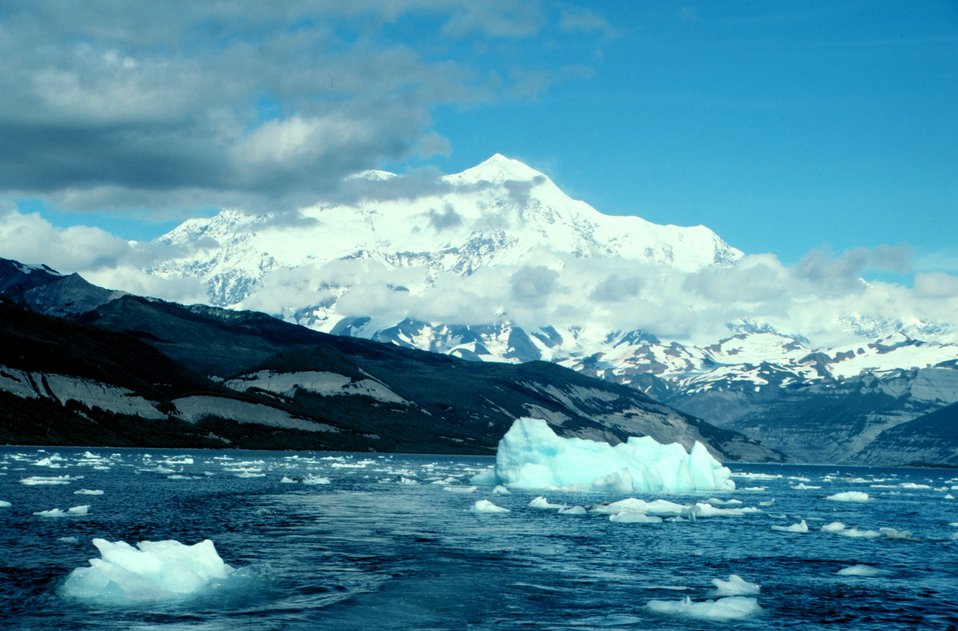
Photo #11 of Mount St. Elias sequence. Mount Saint Elias is one of the largest mountains visible from the sea on the North American continent. It rises to a height of 18,008 feet in a distance of less than 20 miles from sea level at Icy Bay.